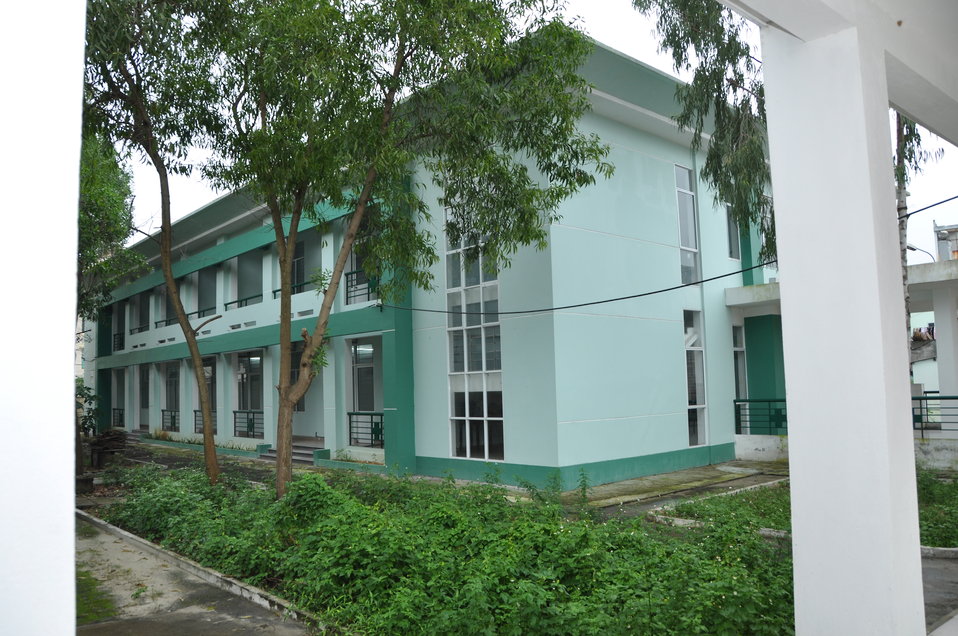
The rehabilitation center of Thanh Khe District Hospital

USAID-supported equipment and training help the staff at Thanh Khe District Hospital to meet the physical therapy needs of the disabled population of Danang.